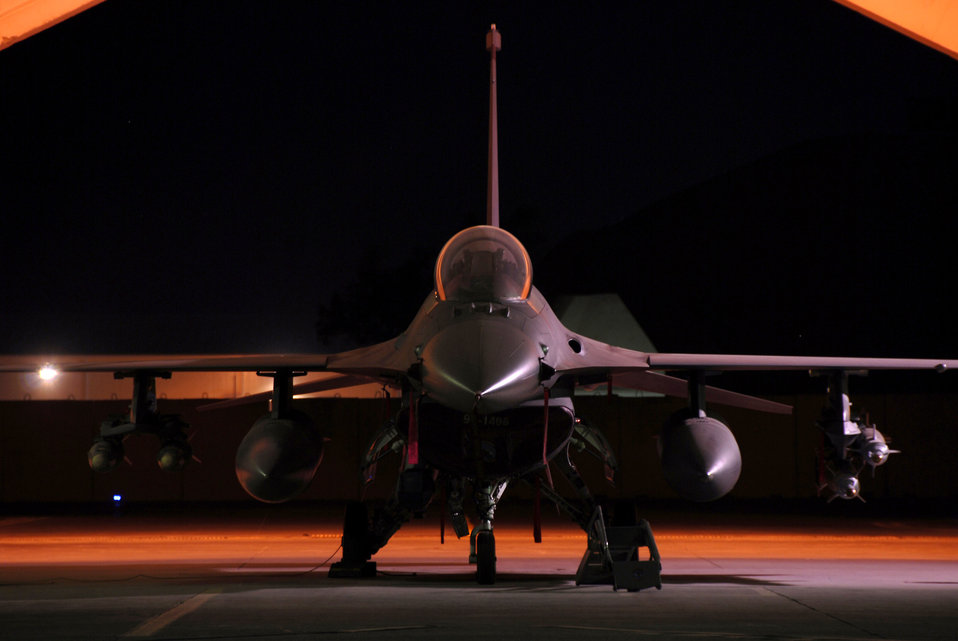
Dec. 8 airpower summary: F-16s alert and ready

An F-16 Fighting Falcon is housed in a hardened aircraft shelter with a pilot ready 24 hours a day to fly missions in alert status. The Fighting Falcon is from the 332nd Expeditionary Fighter Squadron at Joint Base Balad, Iraq.